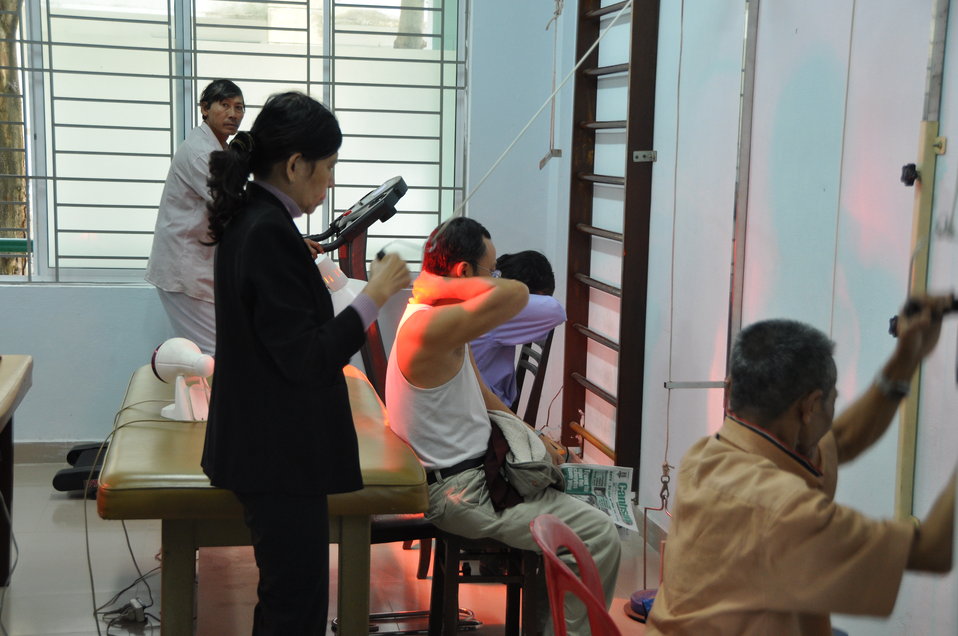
USAID support to Thanh Khe District Hospital

USAID-supported equipment and training help the staff at Thanh Khe District Hospital to meet the physical therapy needs of the disabled population of Danang.